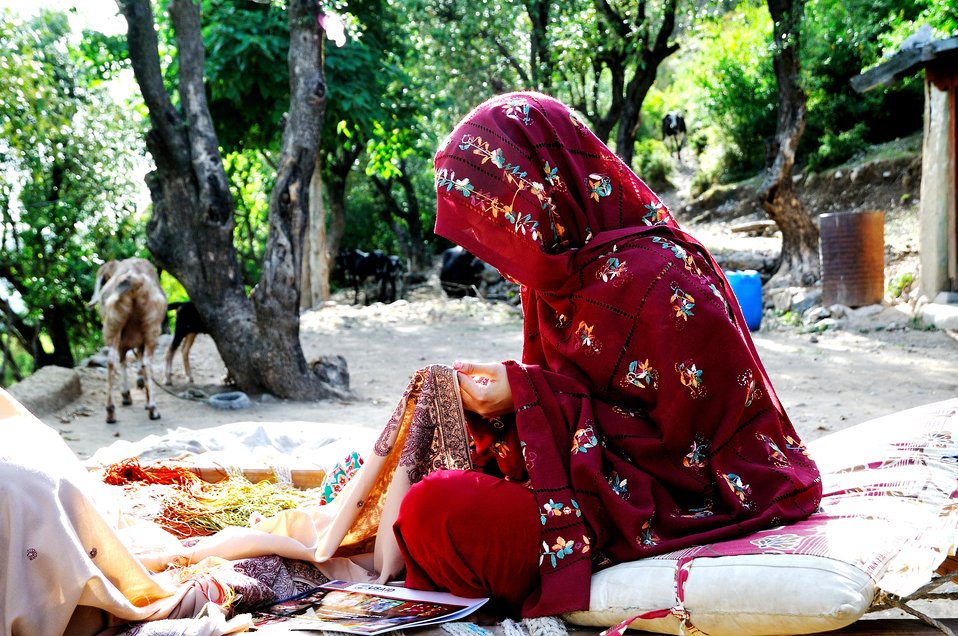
Embellishing Future

Swat, May 19, 2012 - A woman embellisher is busy working on a piece of cloth in the remote district of Swat. She is among the 24,000 women who are benefiting from USAID's Entrepreneurs long term value chain development program in hand embellished sector